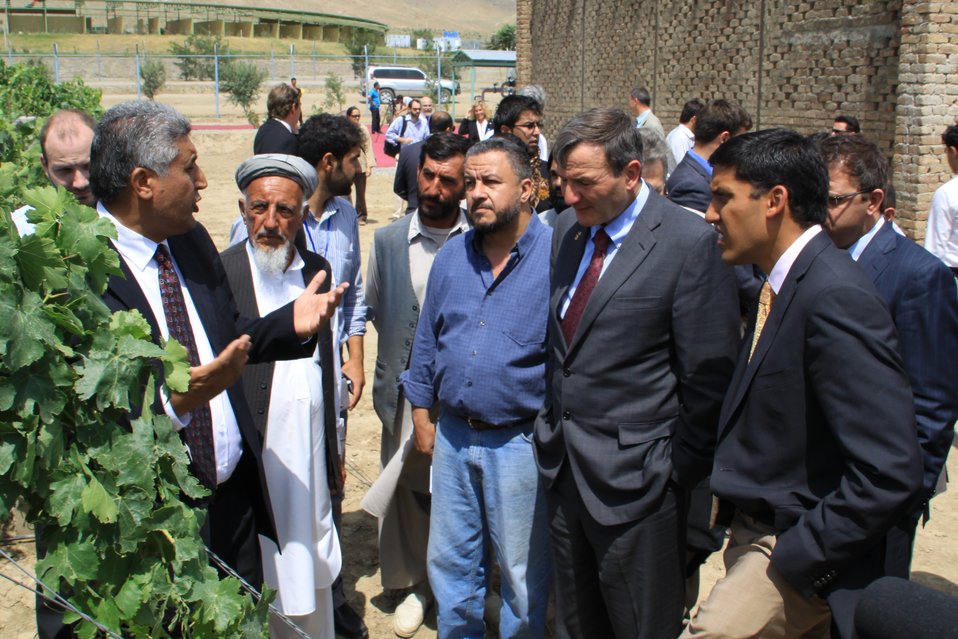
Badam Bagh Farm